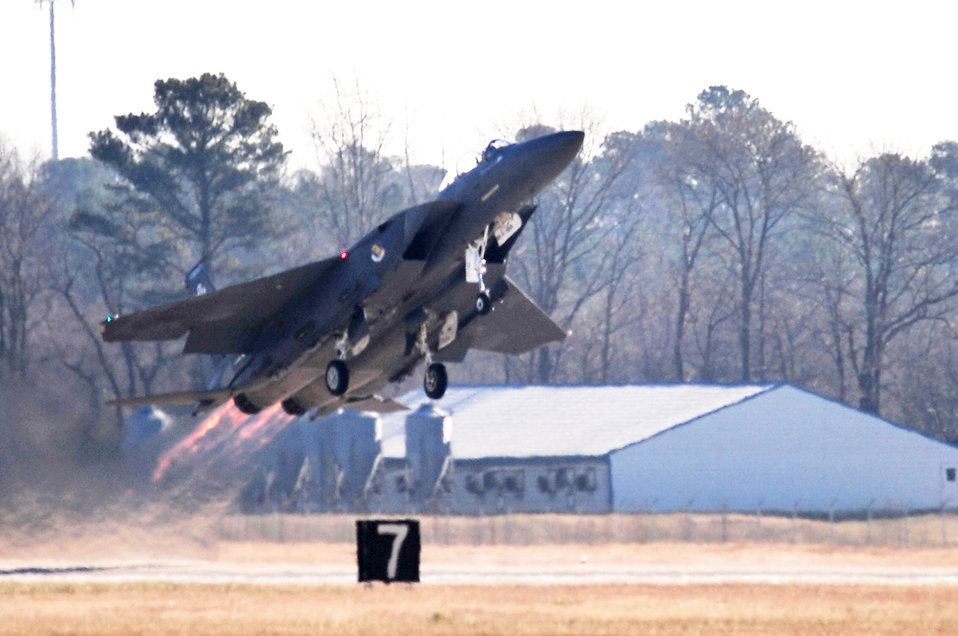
Airpower demonstration

An F-15E Strike Eagle takes off with pilot Maj. Michael Maeder and weapons system officer Capt. John Cox Jan. 10, 2010, from Seymour Johnson Air Force Base, N.C. The F-15E and crew are from the 4th Fighter Wing Strike Eagle Demonstration Team.